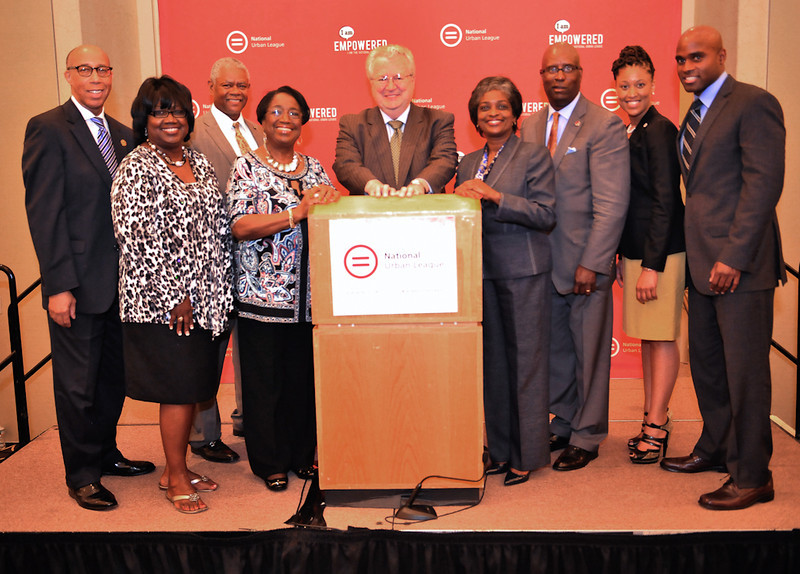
National Urban League Joint Leadership Luncheon 7-24-2013

The National Urban League Joint Leadership Luncheon during the 2013 National Urban League Conference in Philadelphia.